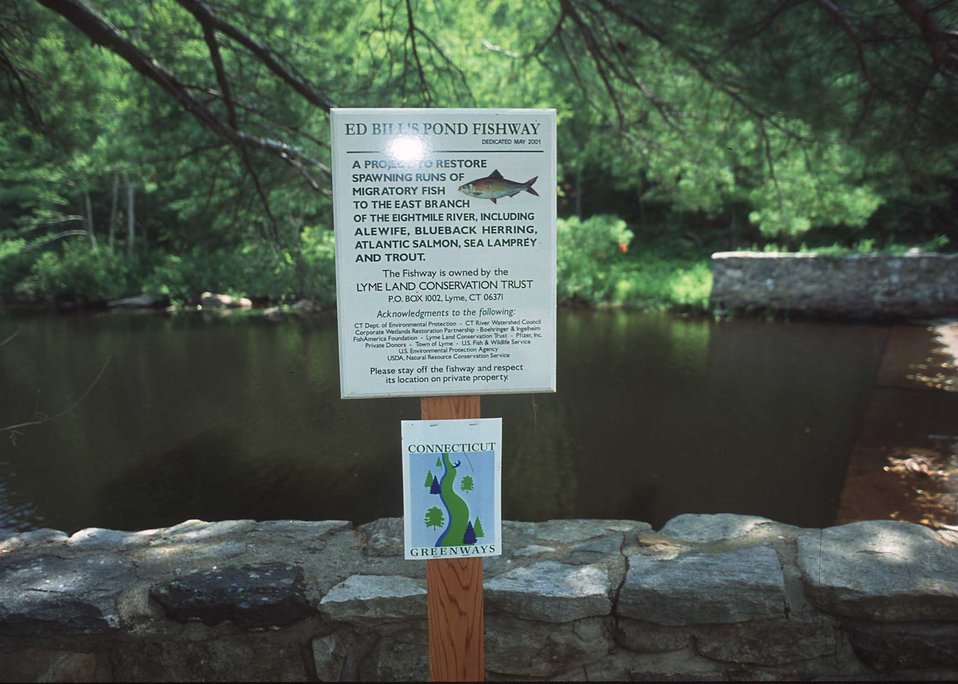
Interpretive signage at the Ed Bills Pond Fishway, a project to restore spawning runs of migratory fish.